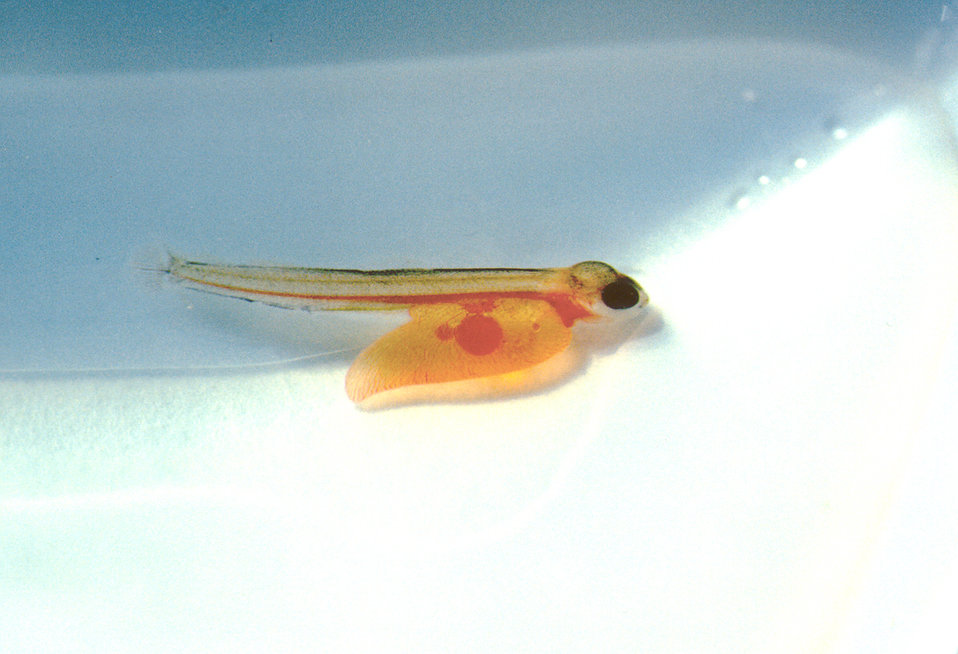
Photo of the Week - Atlantic Salmon Sac Fry

Photo of the Week - 11/23/10

An Atlantic salmon sac-fry, so-called for the nutrient-rich sac that serves as its food source before emerging from the gravel streambed in early spring. The orange color of the eggs and fry is derived from the femal salmon's diet of shirimp while feeding at sea. The young fish's head, eyes, vertebrae, heart and blood system are clearly seen.